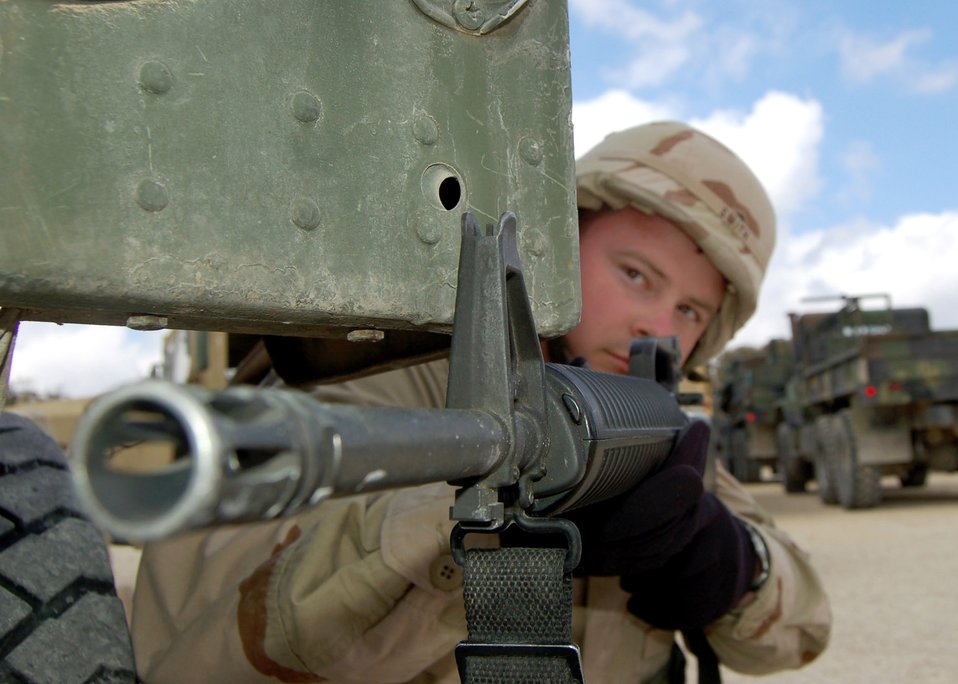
Airmen receive Iraqi training

Tech. Sgt. Charles Smith stares down the barrel of his gun as he guards a simulated convoy mission. Sergeant Smith is a student in the specialized mission course at Camp Bullis, Texas. The two week course is the students first step in a mission that will help the Iraqi air force rebuild their technical schools.